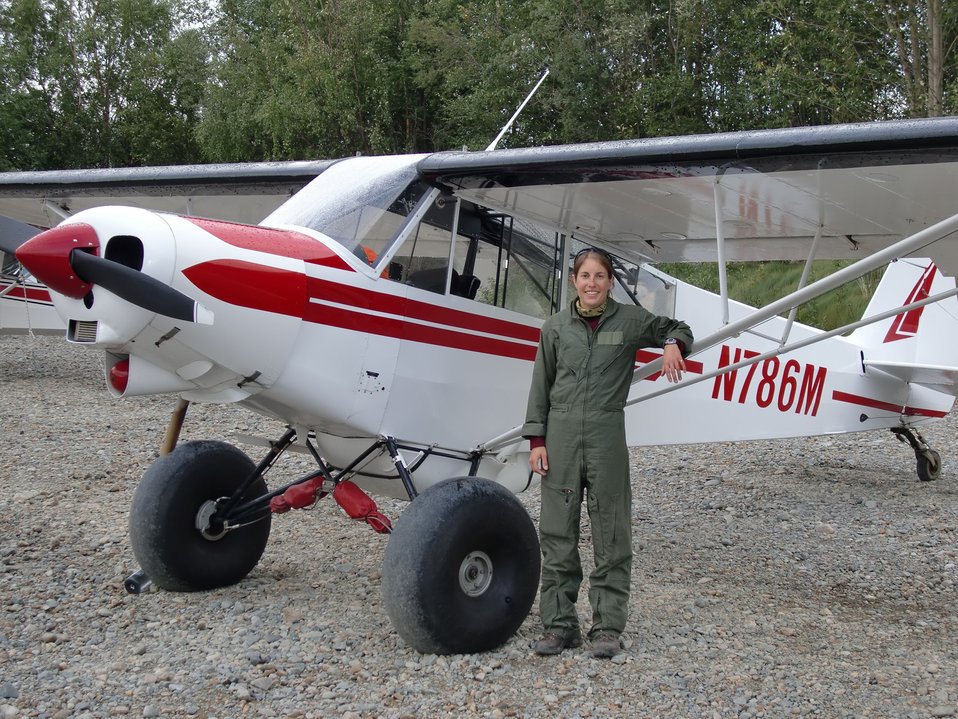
Heather Bartlett

Arctic Refuge Law Enforcement Officer Heather Bartlett stands alongside the Super Cub she flies over wide expanses of Alaska as the U.S. Fish and Wildlife Service’s only female pilot/law enforcement officer. (USFWS)